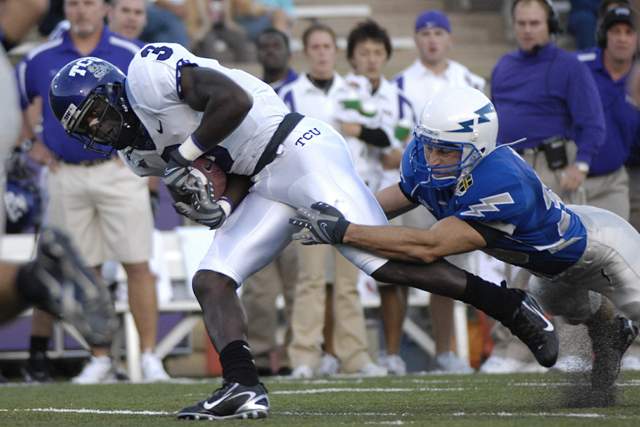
Falcons edge Frogs

Air Force cornerback Garrett Rybak drags down TCU wide receiver Marcus Brock Sept. 13 at Falcon Stadium. Rybak made four solo tackles, assisted on four others plus forced and recovered a fumble in the bluesuiters 20-17 overtime win over the Horned Frogs.